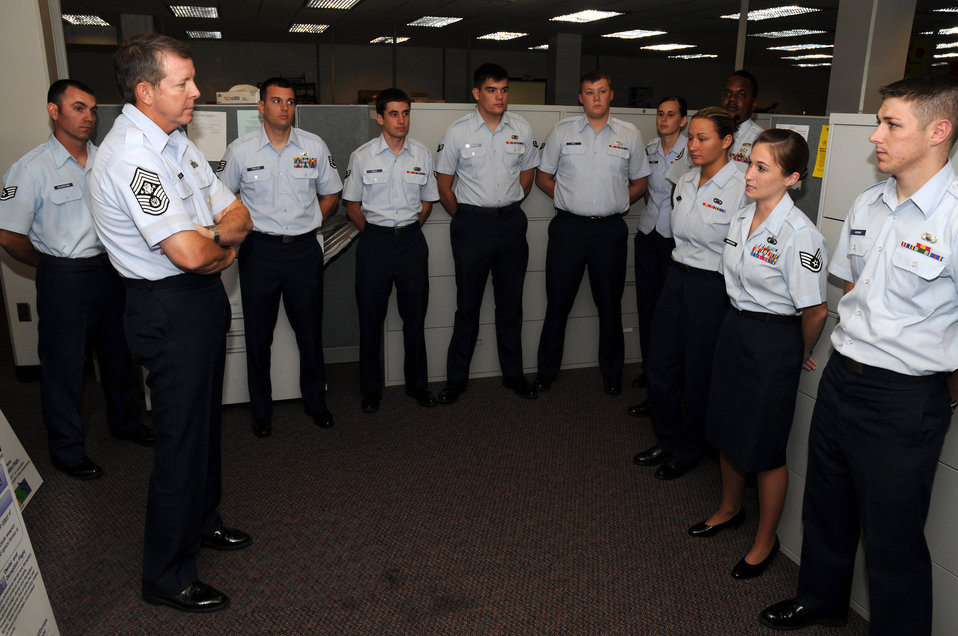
Straight from the chief

Staff Sgt. Shanna Anderson (second from right) briefs Chief Master Sgt. of the Air Force Rodney J. McKinley during his visit Sept. 8 at Wright-Patterson Air Force Base, Ohio. During his visit, the chief visited with enlisted, officer and civilian employees and answered questions from Airmen. He is the 15th chief master sergeant of the Air Force. Sergeant Anderson is assigned to the National Air and Space Intelligence Center.